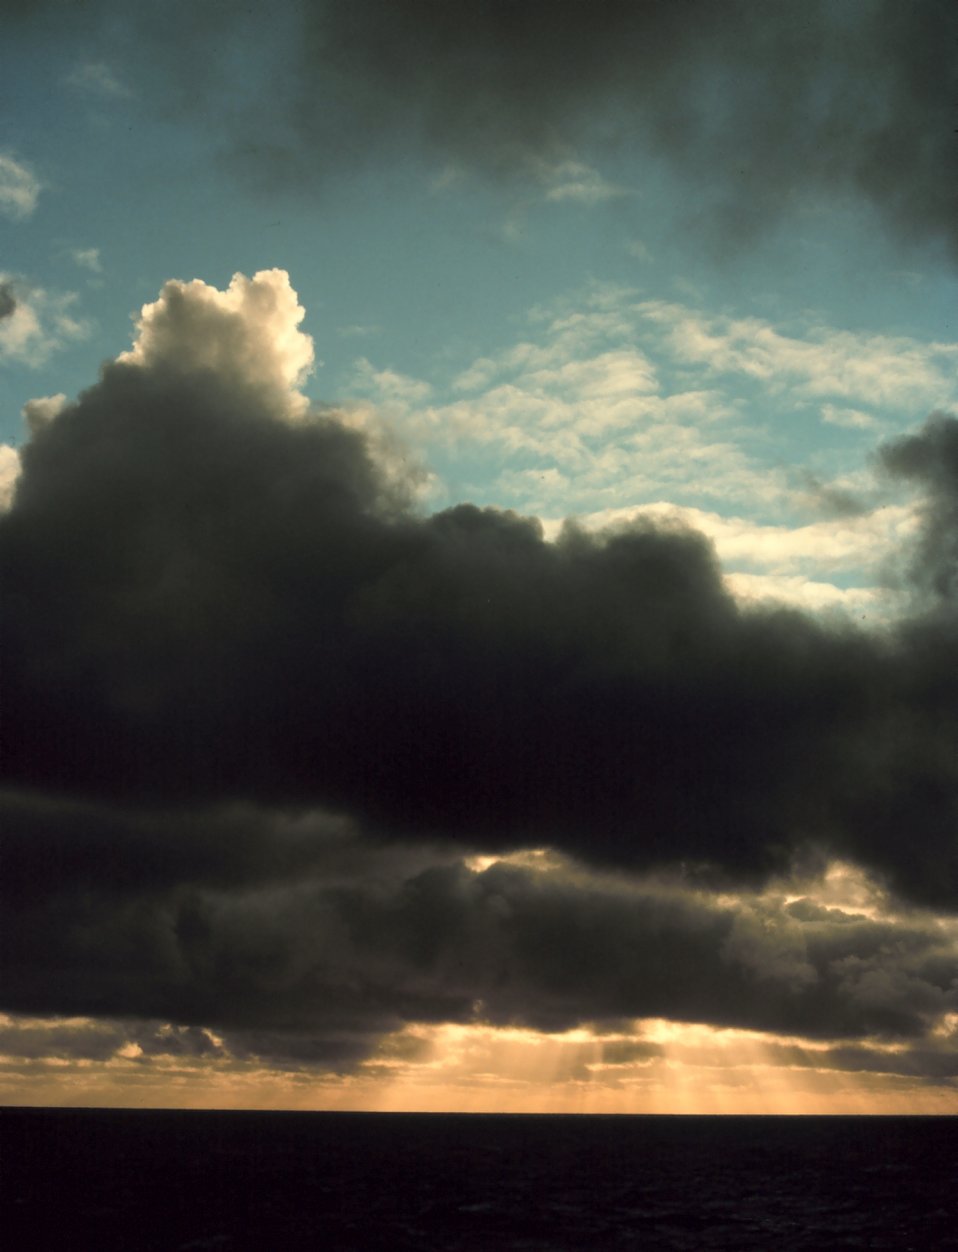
Sunset